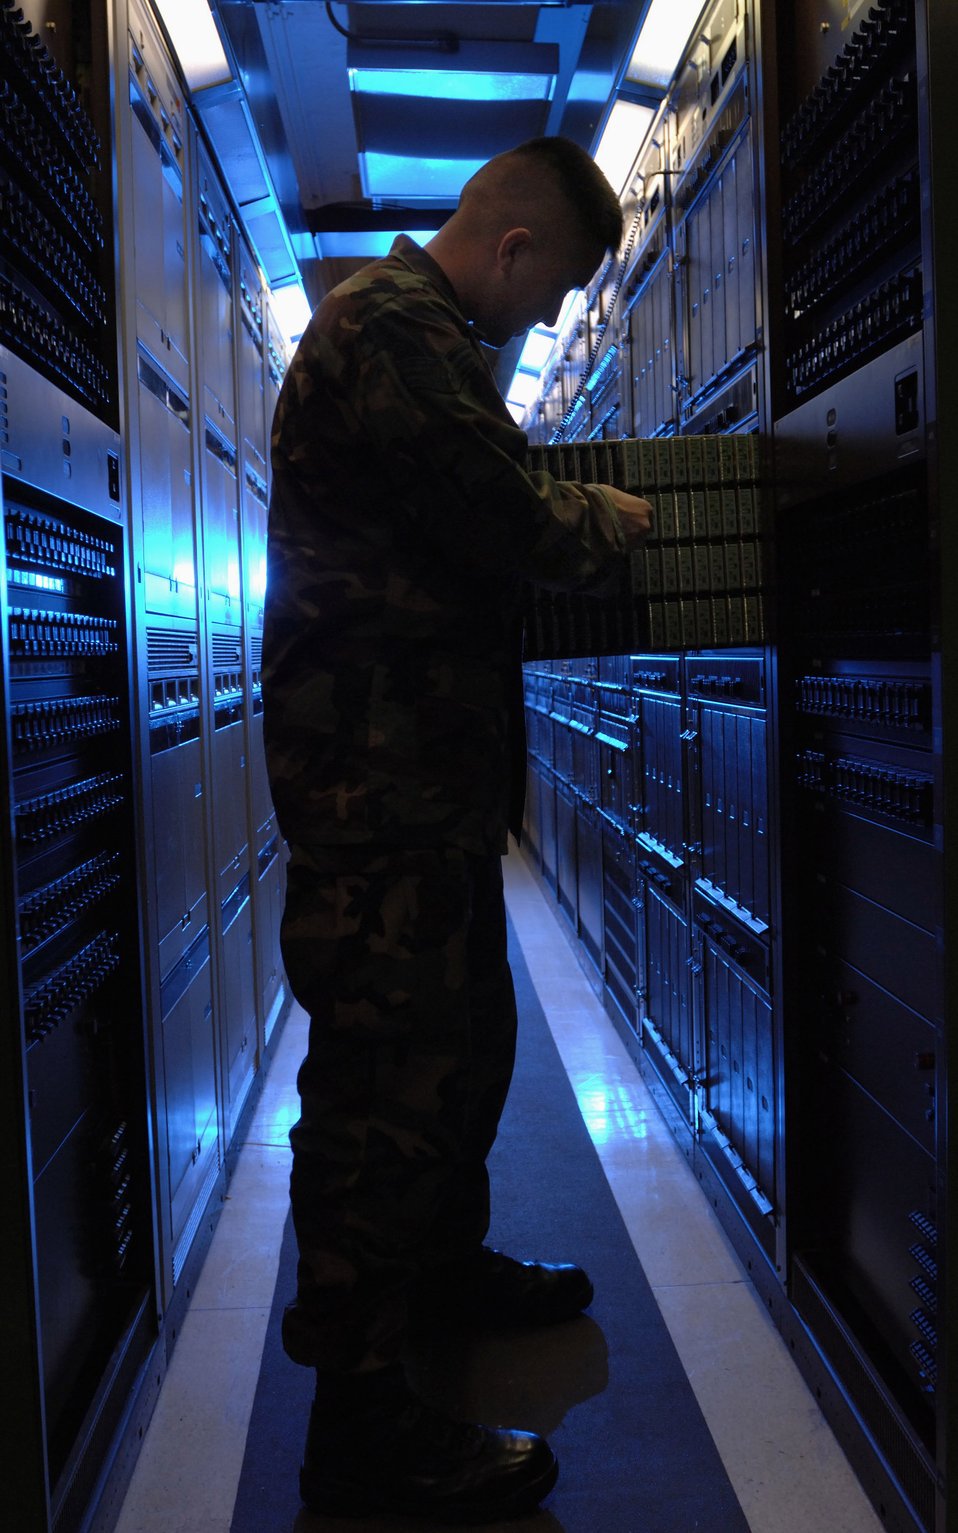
Testing the tele lines

Senior Airman Jason Wakefield, a voice network systems journeyman, checks telephone line cards during a routine inspection of the telephone network system Feb. 21 at Langley Air Force Base, Va. More than 18,000 telephone line cards support every telephone line connected to Langley. Telephones on the network would be nonfunctional without a telephone line card. Airman Wakefield is assigned to the 1st Communications Squadron